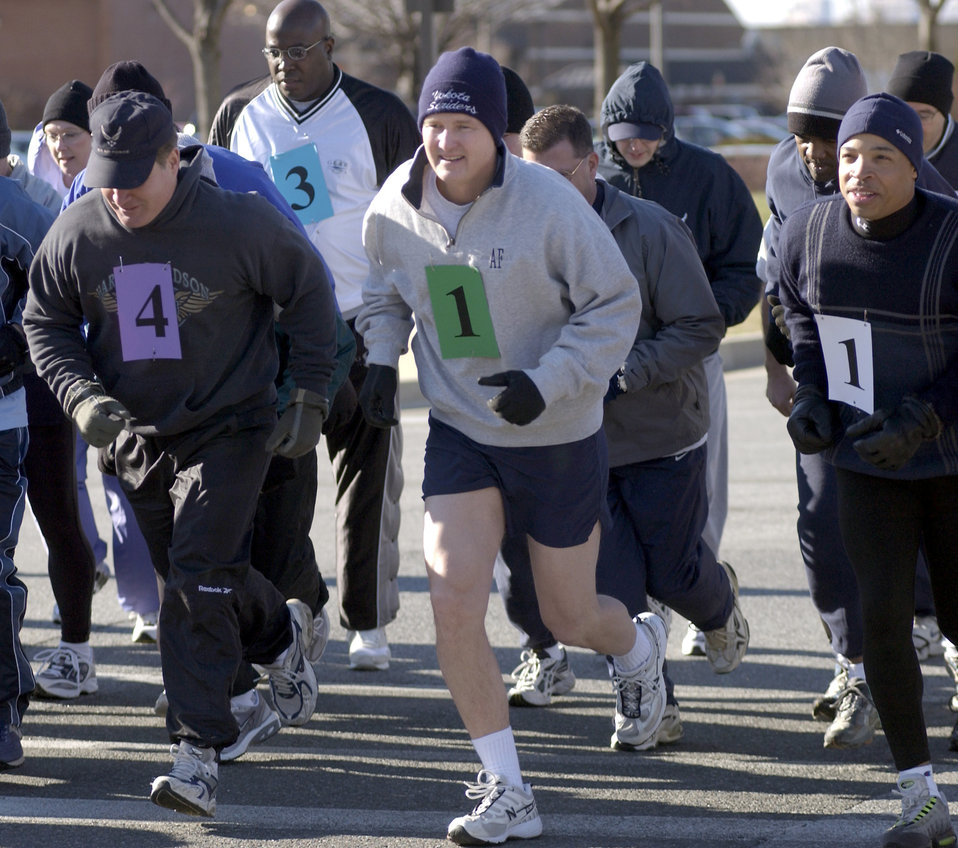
General fitness

BOLLING AIR FORCE BASE, D.C. (AFPN) -- Chief Master Sgt. of the Air Force Gerald R. Murray (center) starts the 1.5-mile run for his fitness evaluation Jan. 7, More than 40 Air Force chief master sergeants from throughout the National Capitol Region braved bitter cold weather to join Chief Murray as he led the way in helping Air Force Chief of Staff Gen. John P. Jumper officially launch the new Air Force fitness standard.